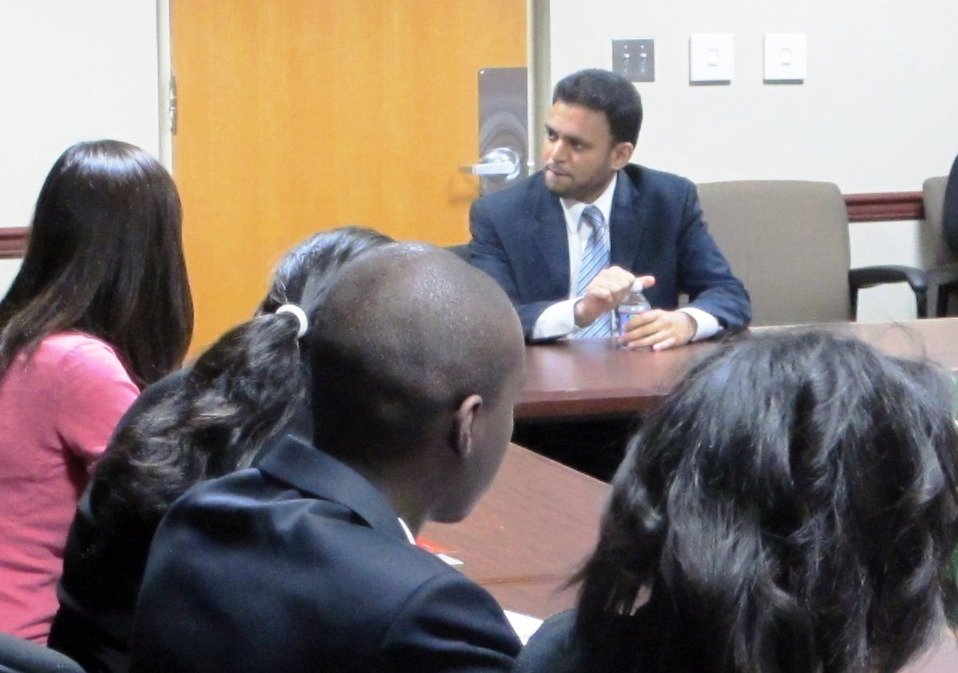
Special Envoy Hussain Listens to a Student

Special Envoy to the Organization of the Islamic Conference Rashad Hussain listens to the opinion of a Center for Global Understanding student on Muslim issues at the U.S. Department of State in Washington, D.C., on June 16, 2011.